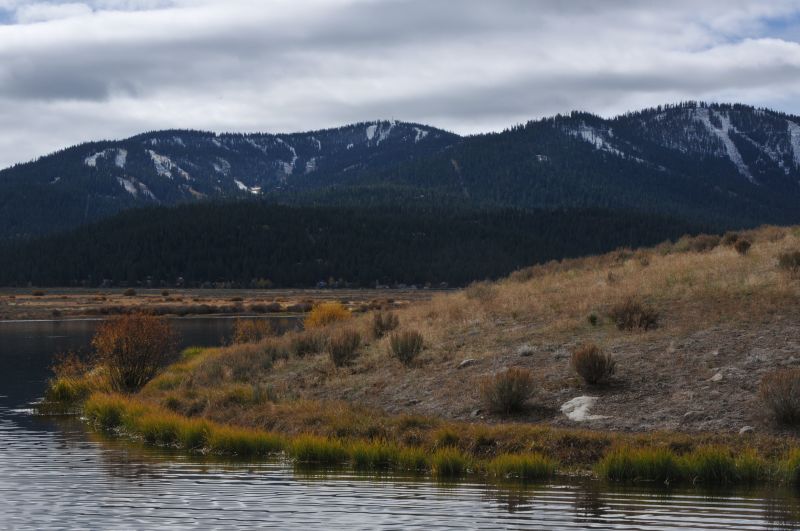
MARTIS CREEK LAKE, Calif. (Oct. 31, 2010) - The Corps' Martis Creek Lake, near Truckee, Calif., has grown infested with the invasive Eurasian watermilfoil plants, likely brought to the area by recreational boaters. Volunteers placed sunlight barriers here Oct. 31 as part of a project to eradicate the plants from the lake bottom. The gas-permeable barriers kill the milfoil plants by blocking sunlight, but don't disturb other plant and animal species native to the lake. The Corps is partnering with the Tahoe Divers Conservancy on the project, funded by a $20,000 grant from the Community Foundation of Western Nevada's Truckee River Fund.